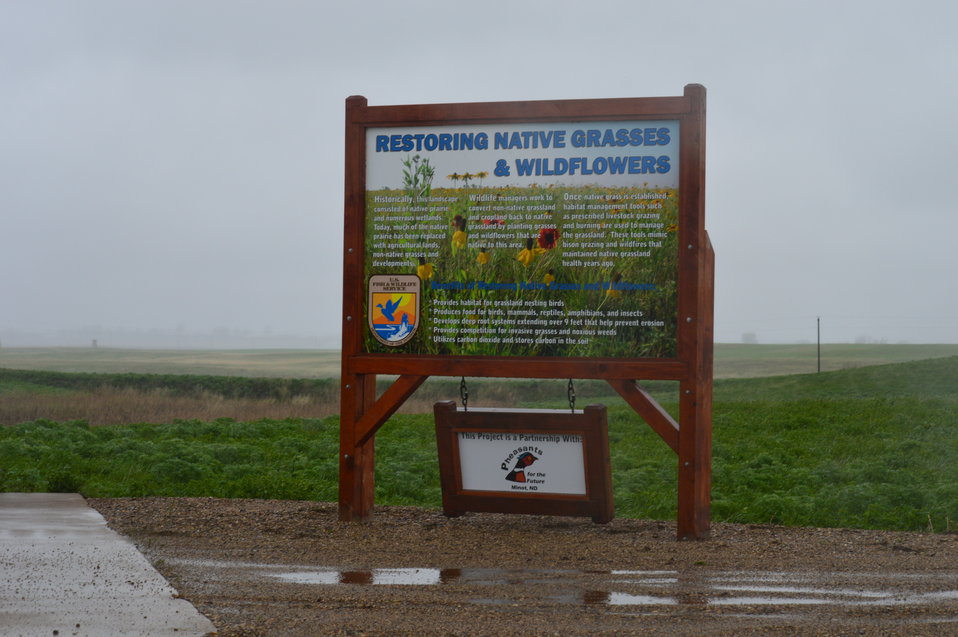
Interpretation sign

Scenery and wildlife and Audubon National Wildlife Refuge in North Dakota.